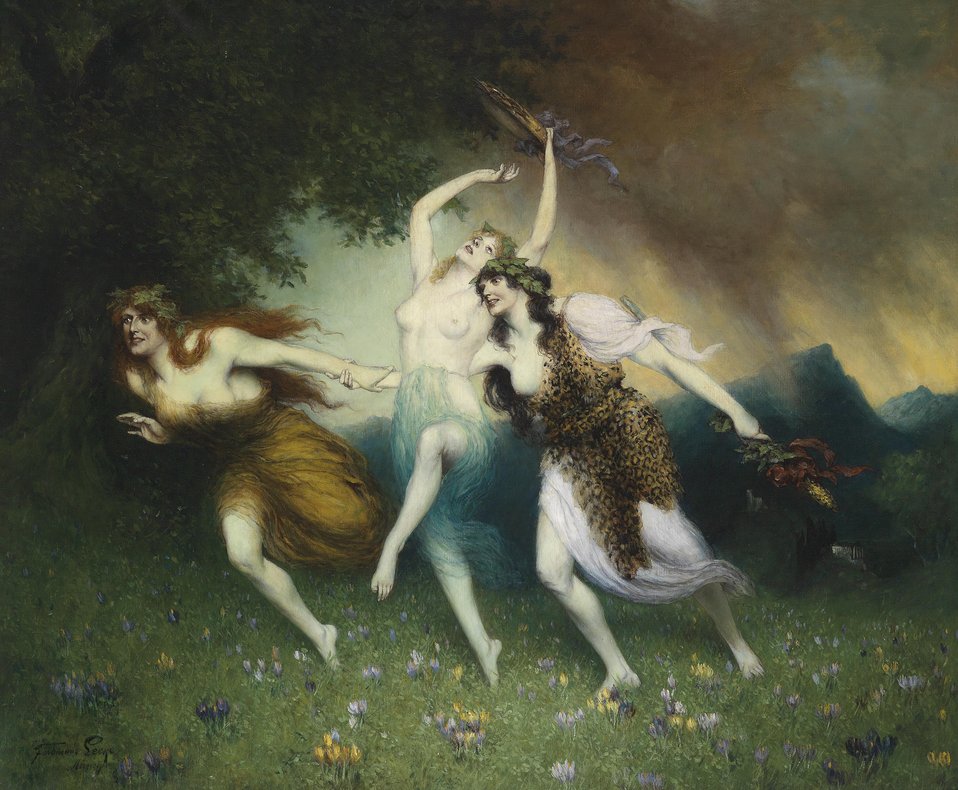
Deutsch: Fliehende Nymphen, signiert, bezeichnet Ferdinand Leeke München, Öl auf Leinwand